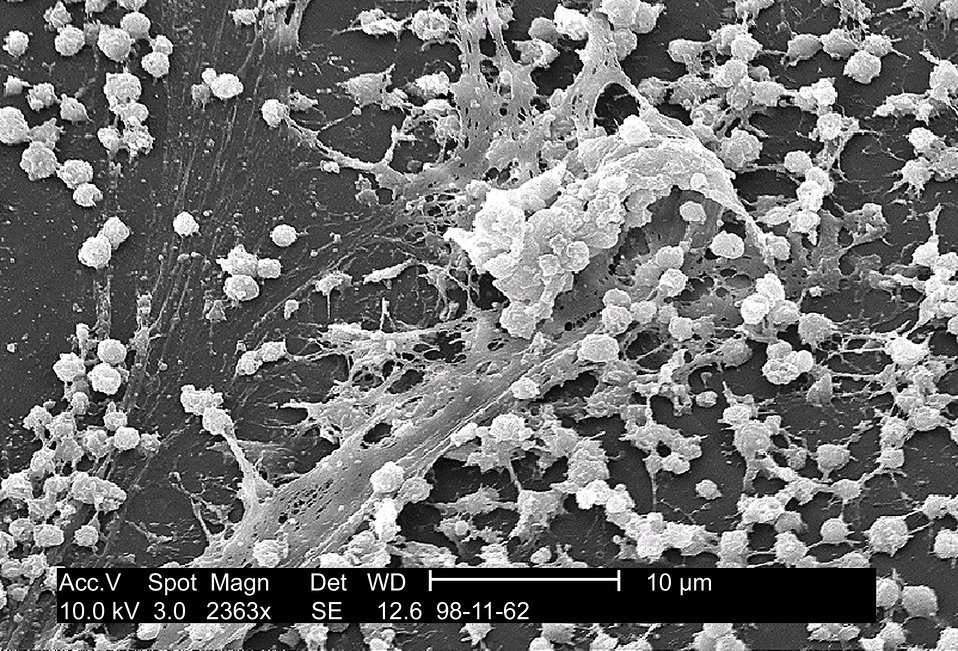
Scanning electron micrograph of a Staphylococcus biofilm on the inner surface of a needleless connector.